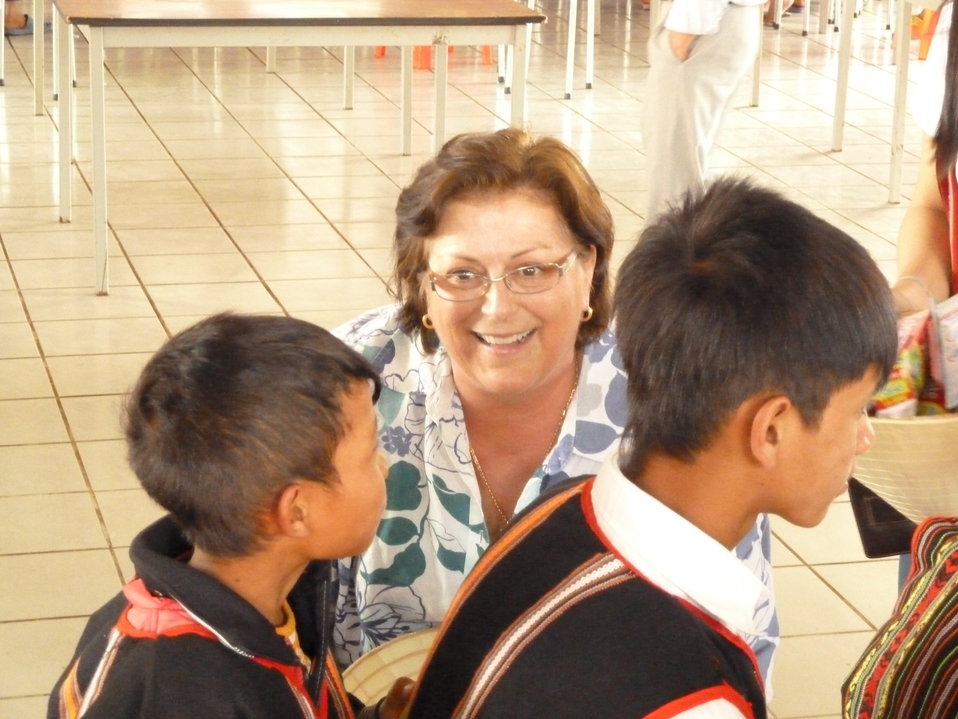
U.S. Deputy Chief of Mission Claire Pierangelo distributes toothbrushes and toothpaste at a dental screening at Kon Ray school